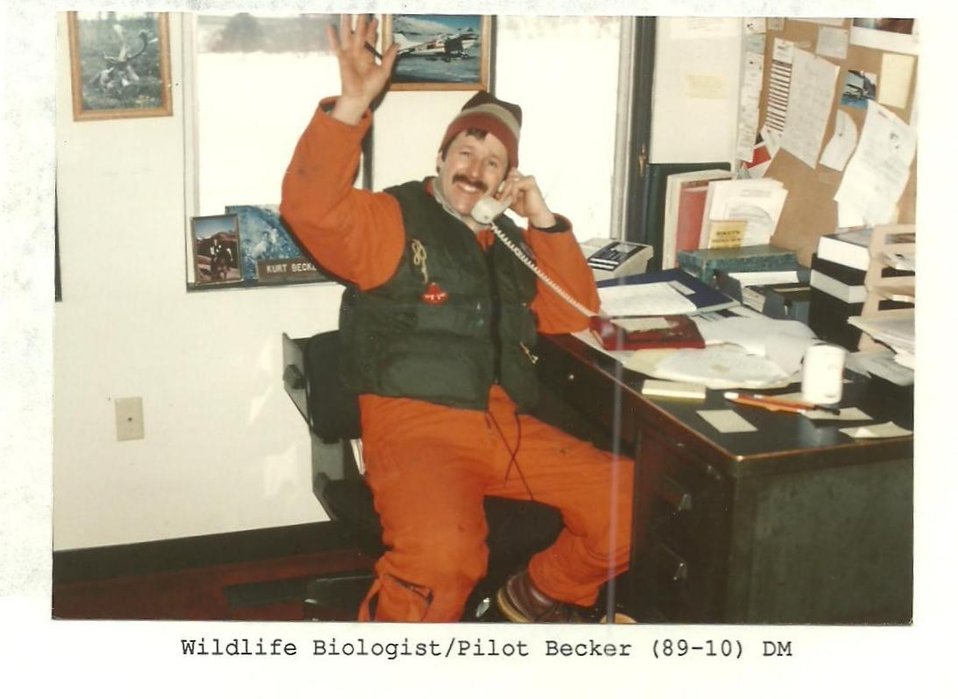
(1989) Pilot Becker on Casual Friday

Credit: USFWS

Source and Contact: Kodiak National Wildlife Refuge